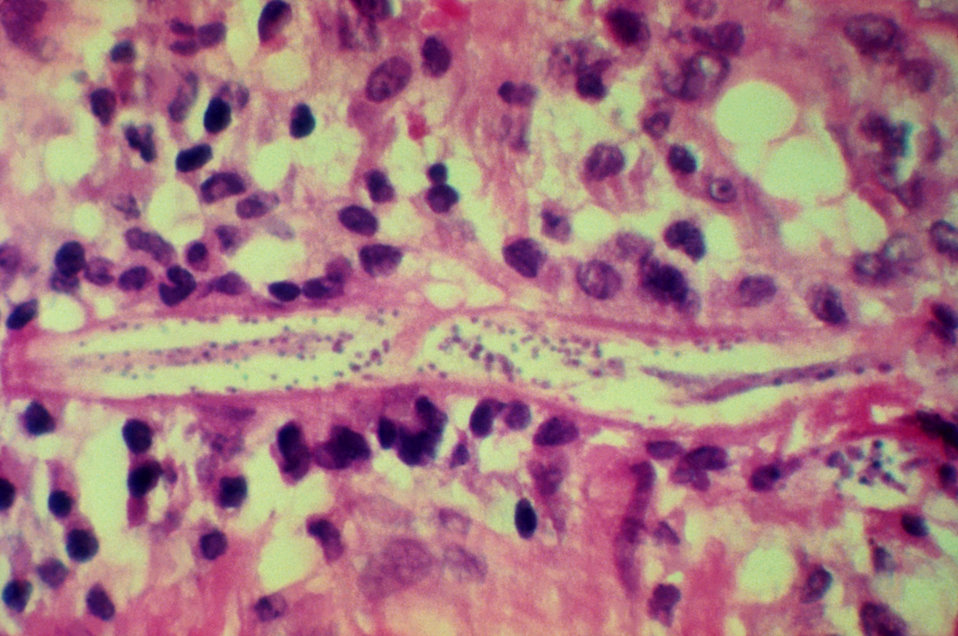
This micrograph reveals a Strongyloides stercoralis parasite embedded in the intestinal mucosa.